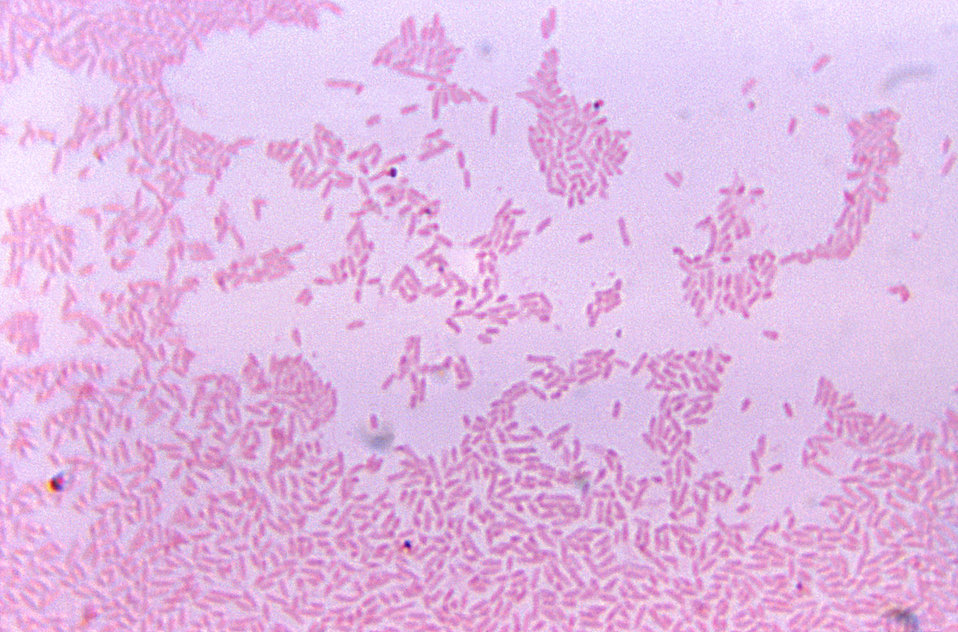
This micrograph depicts the gram-negative bacterium, Fusobacterium novum cultured in blood agar for 48 hours.